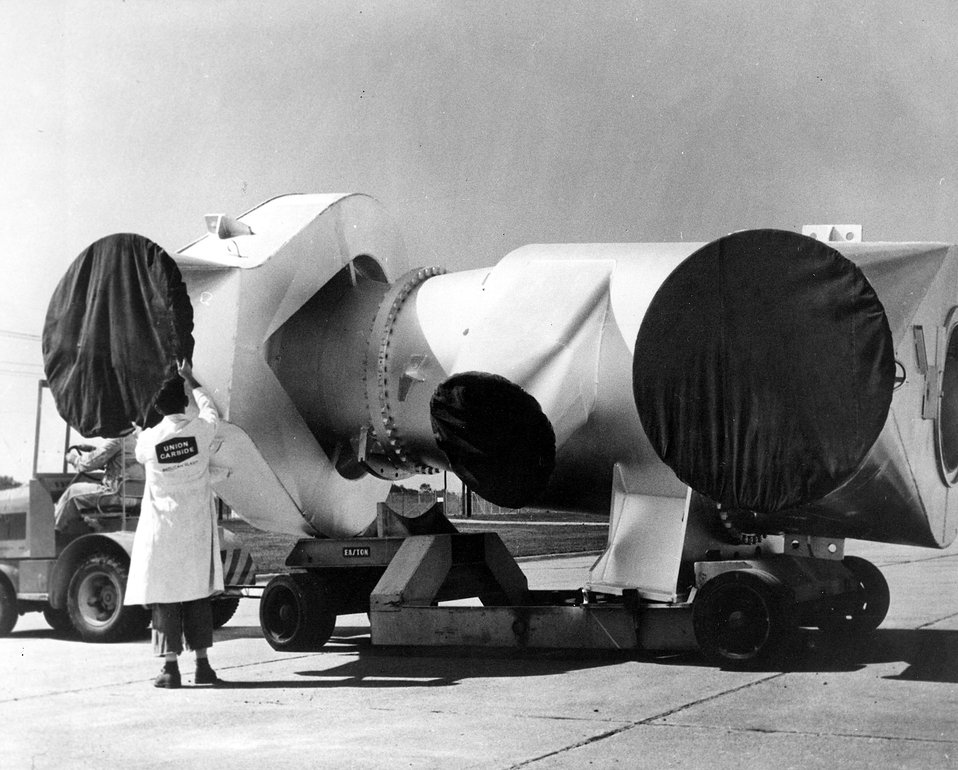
Part of the Process Equipment Modification Project is the improvement of the compressor discharge nozzle, such as this one at the Energy Research and Development Administration's Paducah Gaseous Diffusion Plant. Circa 1975.